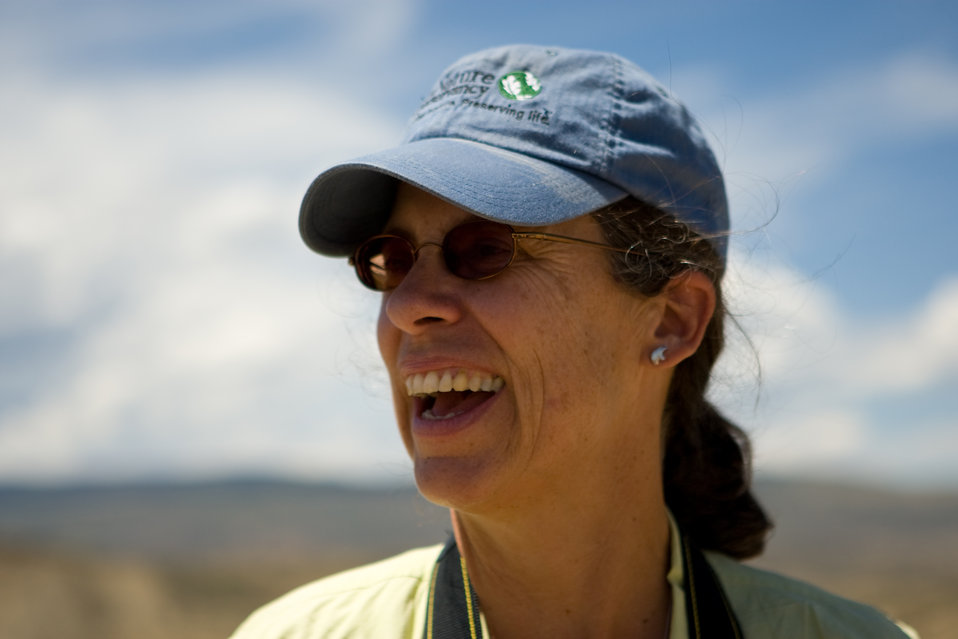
Colorado Rare Plant Conservation Initiative

The Colorado Rare Plant Conservation Initiative (RPCI) is a partnership of 23 statewide and regional agencies, private organizations, and academic institutions working to conserve 121 rare plants in Colorado. As part of these efforts the group developed the Colorado Rare Plant Conservation Strategy, developed Best Management Practices to reduce energy development impacts, addressed climate change, and developed focused strategies for the conservation of individual species at eight priority landscapes. The group has also worked to coordinate volunteer efforts for plant conservation across the state.